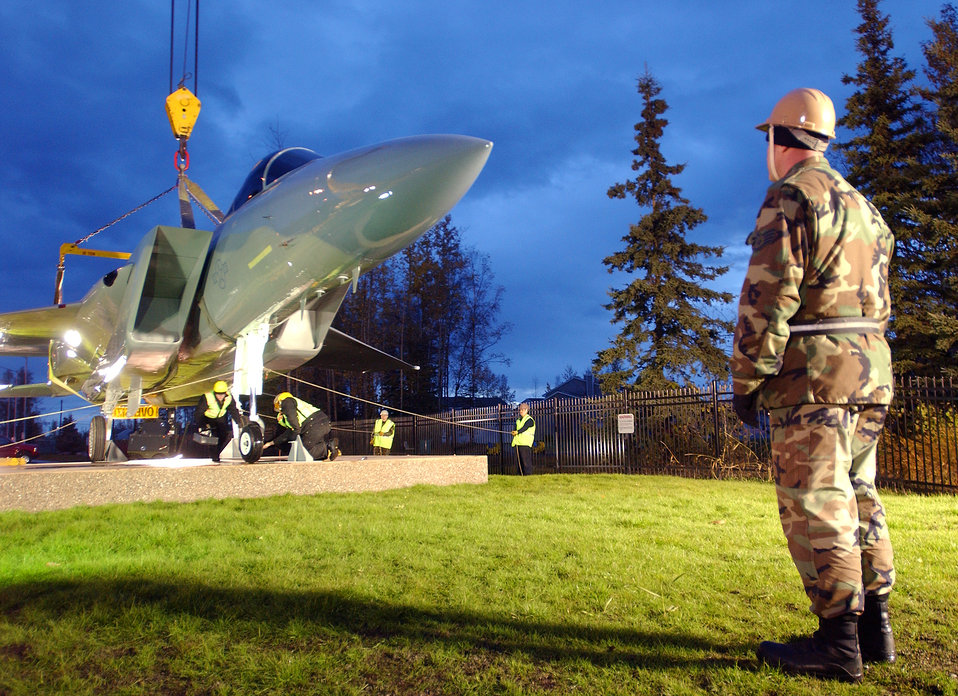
Not-so-static display

ELMENDORF AIR FORCE BASE, Alaska -- Staff Sgt. Jason Wood watches an F-15 Eagle being positioned onto its stand. The aircraft became the first static display to sit outside the main gate here. It was towed across base and down about one mile of a busy highway. With help from the local police department, the highway was shut down for less than an hour for towing of the aircraft. Sergeant Wood was the lift supervisor for the hoisting and is assigned to the 3rd Equipment Maintenance Squadron.